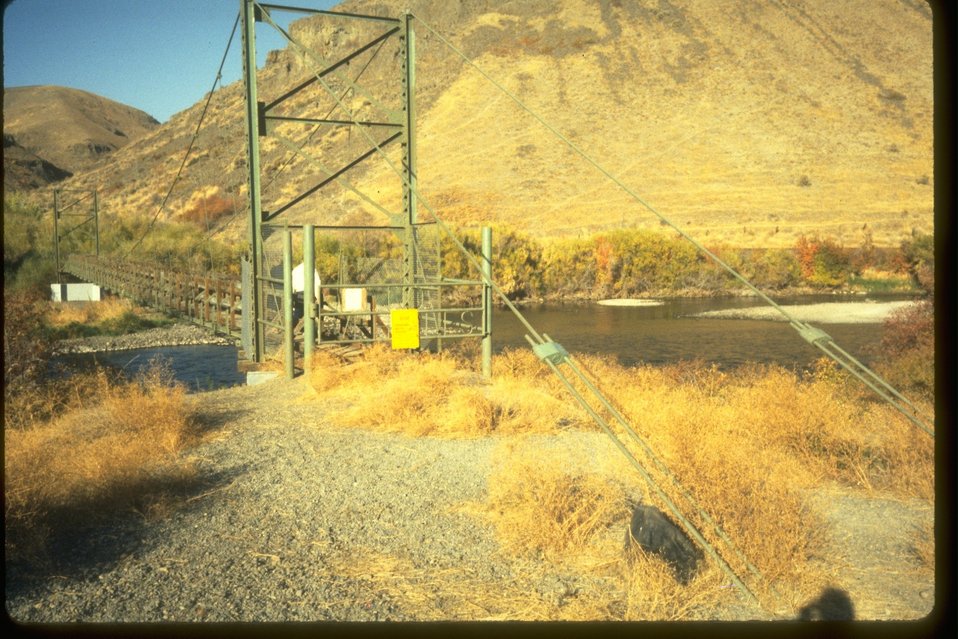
Footbridge at Umtanum Recreation Site in the Yakima Rier Canyon.